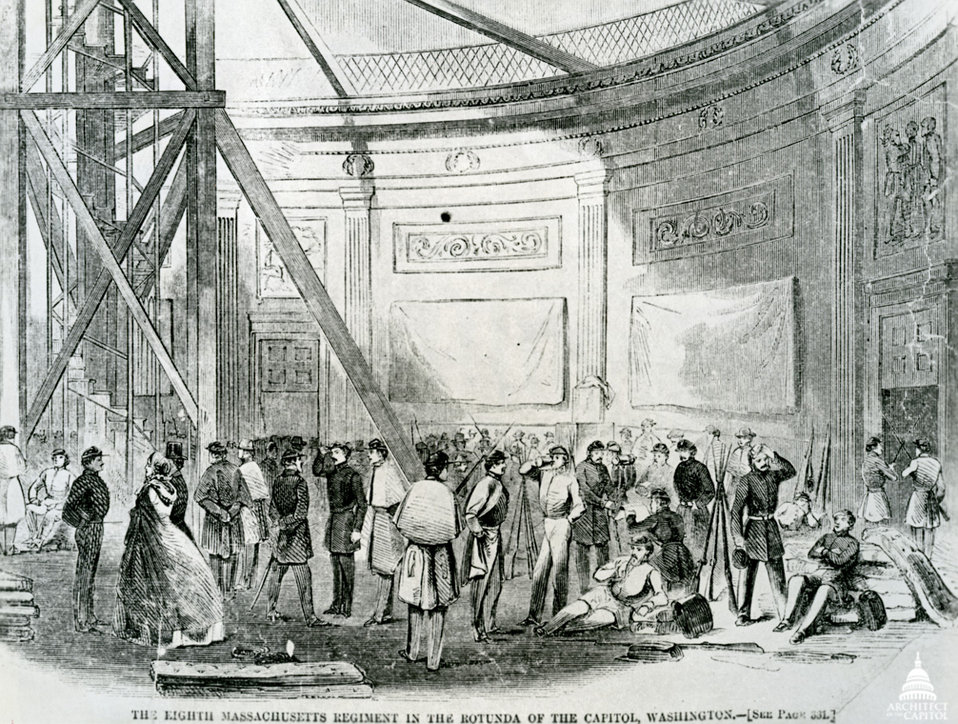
Troops in Rotunda

Union Troops in 1861 in the Rotunda, the scaffold to build the new Dome is seen in the background.